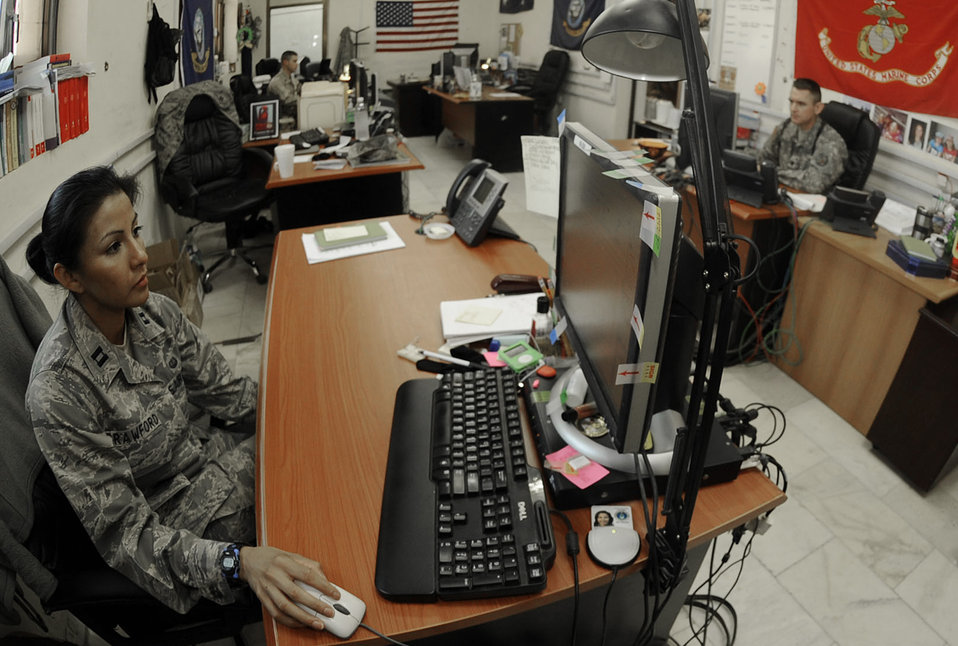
JAG Airman provides unique service while deployed

Capt. Sophia Crawford works three different sides of the law in her position as the detention, judicial and legal policy attorney in the Multi-National Force-Iraq's Office of the Staff Judge Advocate. She is the U.S. legal representative providing feedback on how the Iraq detention facilities are performing with regard to legal issues.